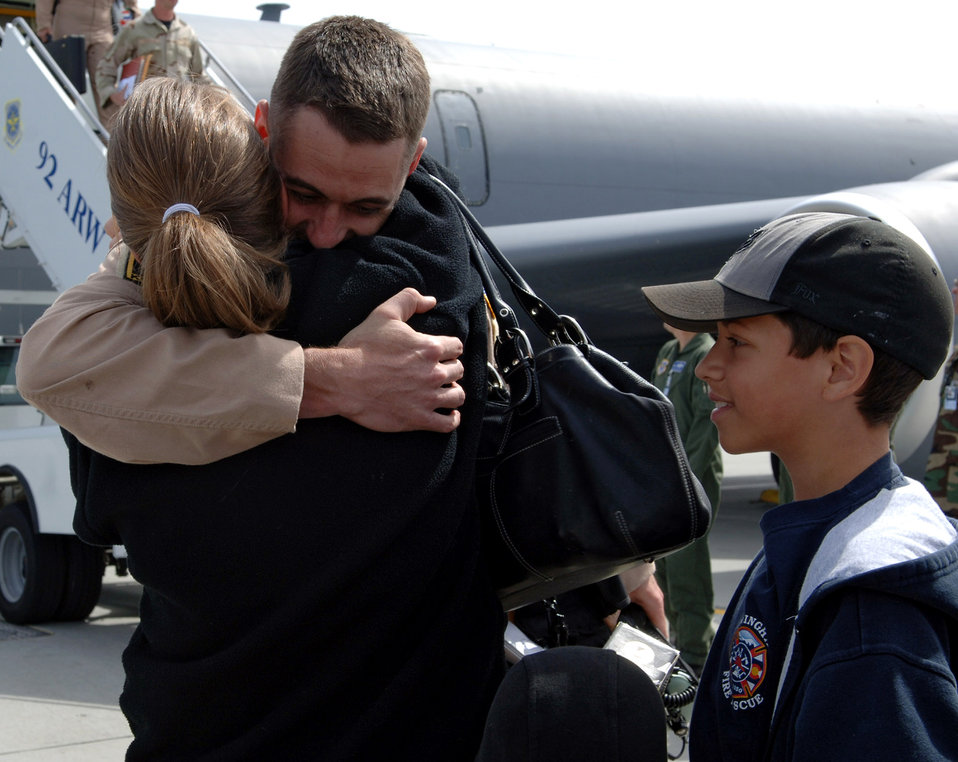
Fairchild Airmen reunite with family after deployment

Capt. Brendan Voitik embraces his wife, Amy, after disembarking a KC-135 Stratotanker April 30 at Fairchild Air Force Base, Wash. Captain Voitik returned with 44 other Airmen after their deployment to support Operation Enduring Freedom at Manas Air Base, Kyrgyzstan.